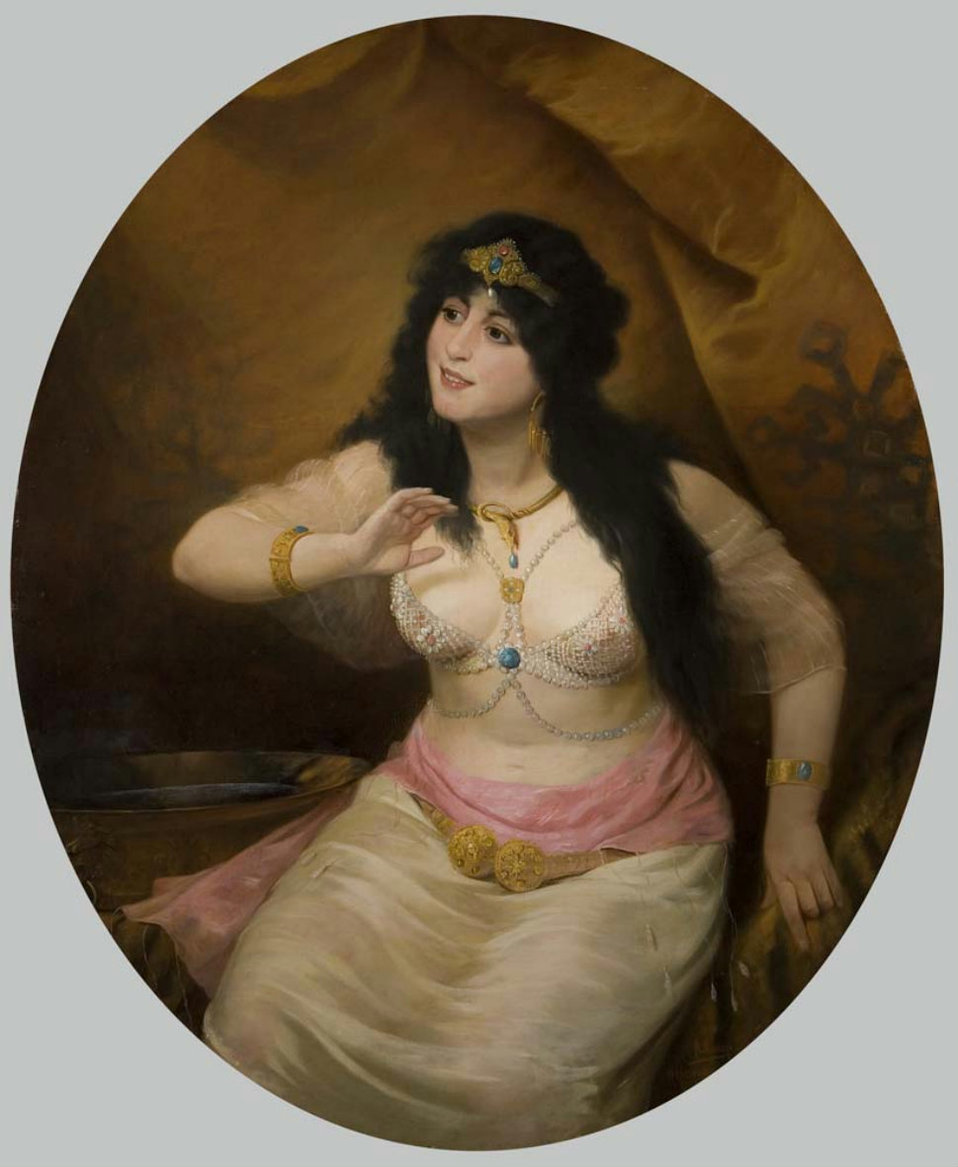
August Hermann Knoop Oriientalisches Mädchenbildnis